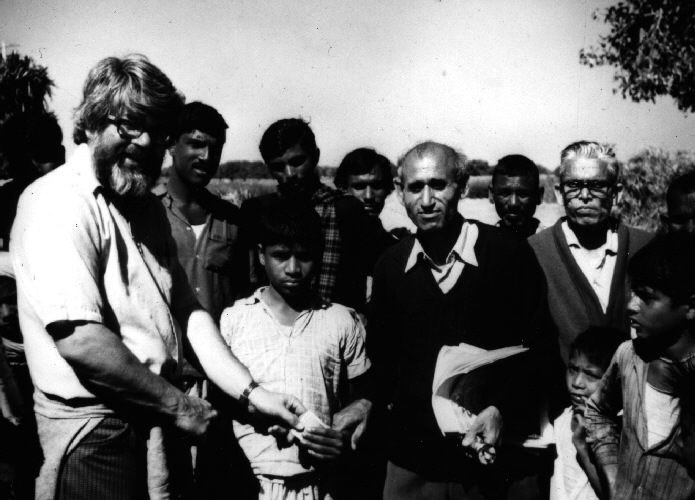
Smallpox Eradication Program, Bihar, India.